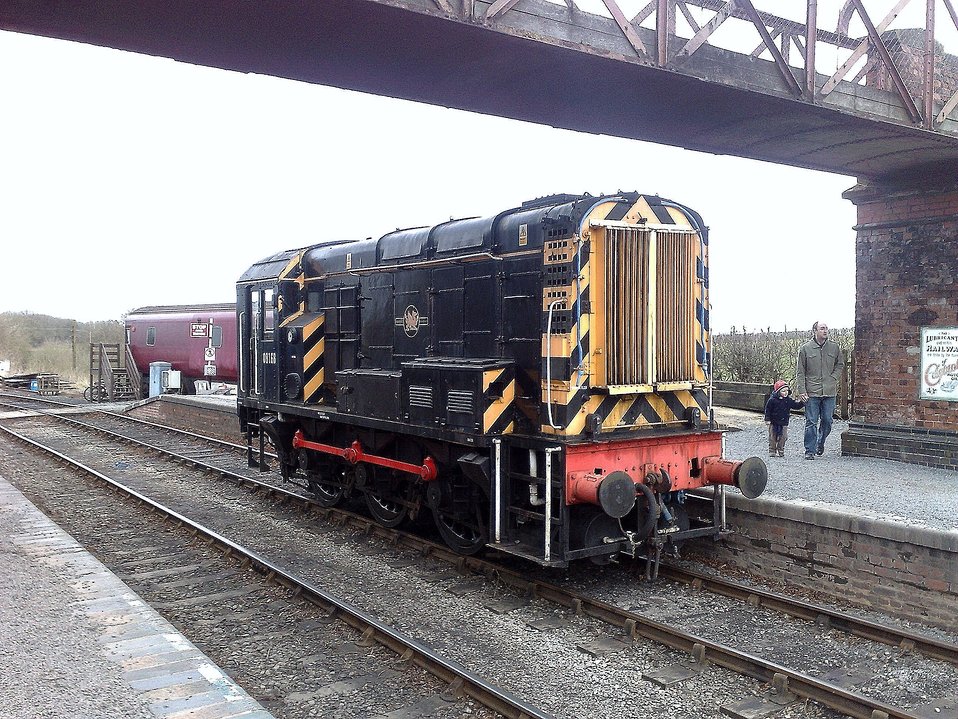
British Rail Class 08 08168 at Shackerstone Station, Battlefield Line Railway